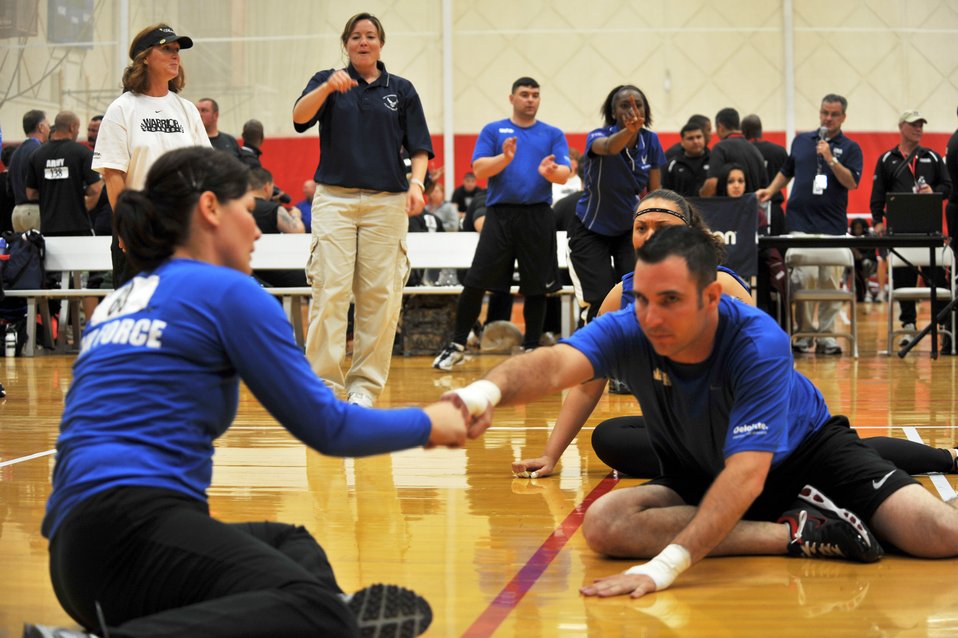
AF Volleyball

Capt. Nicki Marino and Tech. Sgt. Elisha Abercrombie yell out to the Air Force team that they need one more point to win during the Warrior Games volleyball match against the Army May 12, 2010 at the Olympic Training Center, Colorado Springs. The Air Force went on to win the game 15-7. The Warrior Games competition began May 10 and finishes on May 14, 2010 at the U.S. Olympic Training Center in Colorado Springs.